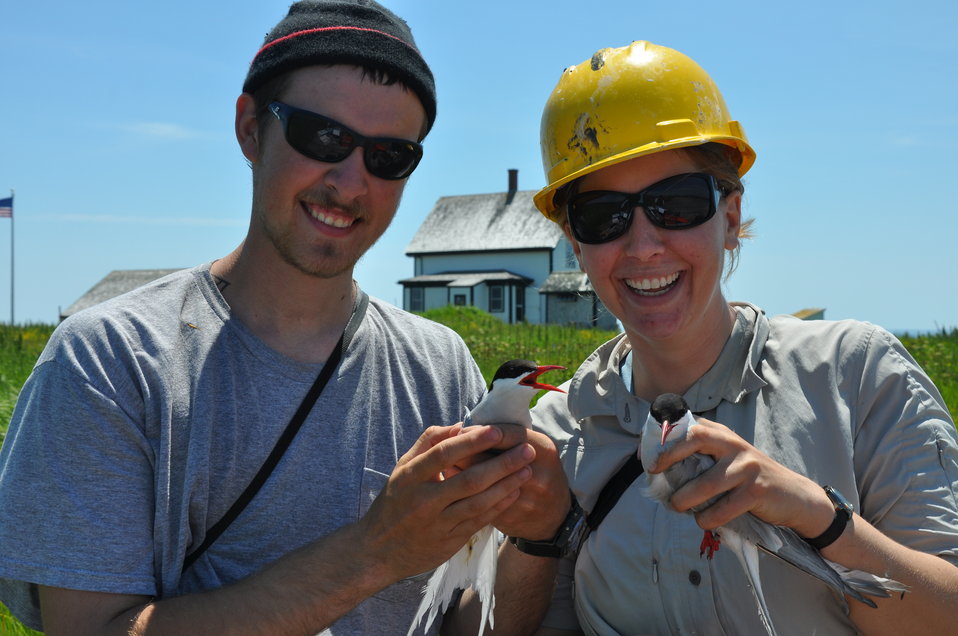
Maine Coastal Island Researchers Handling Terns

Petit Manan Island, Maine Coastal Islands NWR. Summer with the Seabirds blog: mainecoastalislands.wordpress.com/2010/08/01/terns/